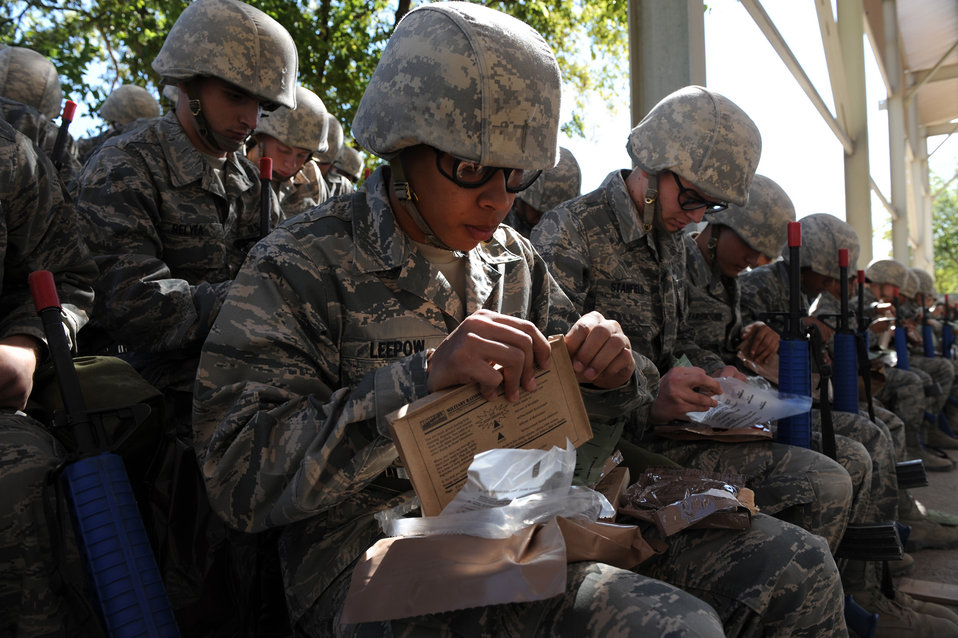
Air Force officials begin extended Basic Military Training

Basic trainees take a break during briefings to eat Meals, Ready to Eat during a field training exercise Oct. 28 at Lackland Air Force Base, Texas.